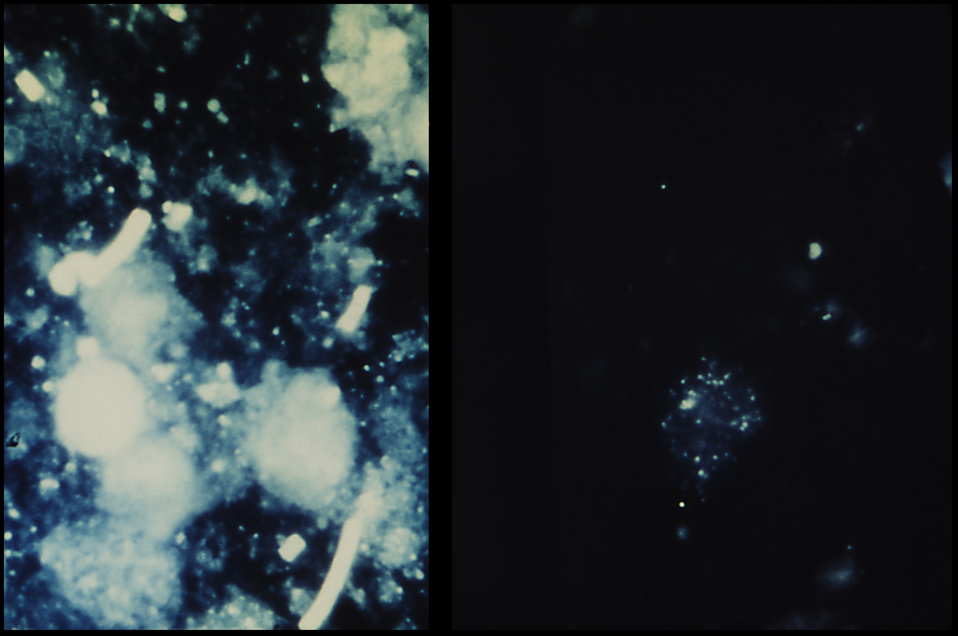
This is lymph node impression smear reveals B. anthracis on the left, with normal, non-infected tissue on the right.